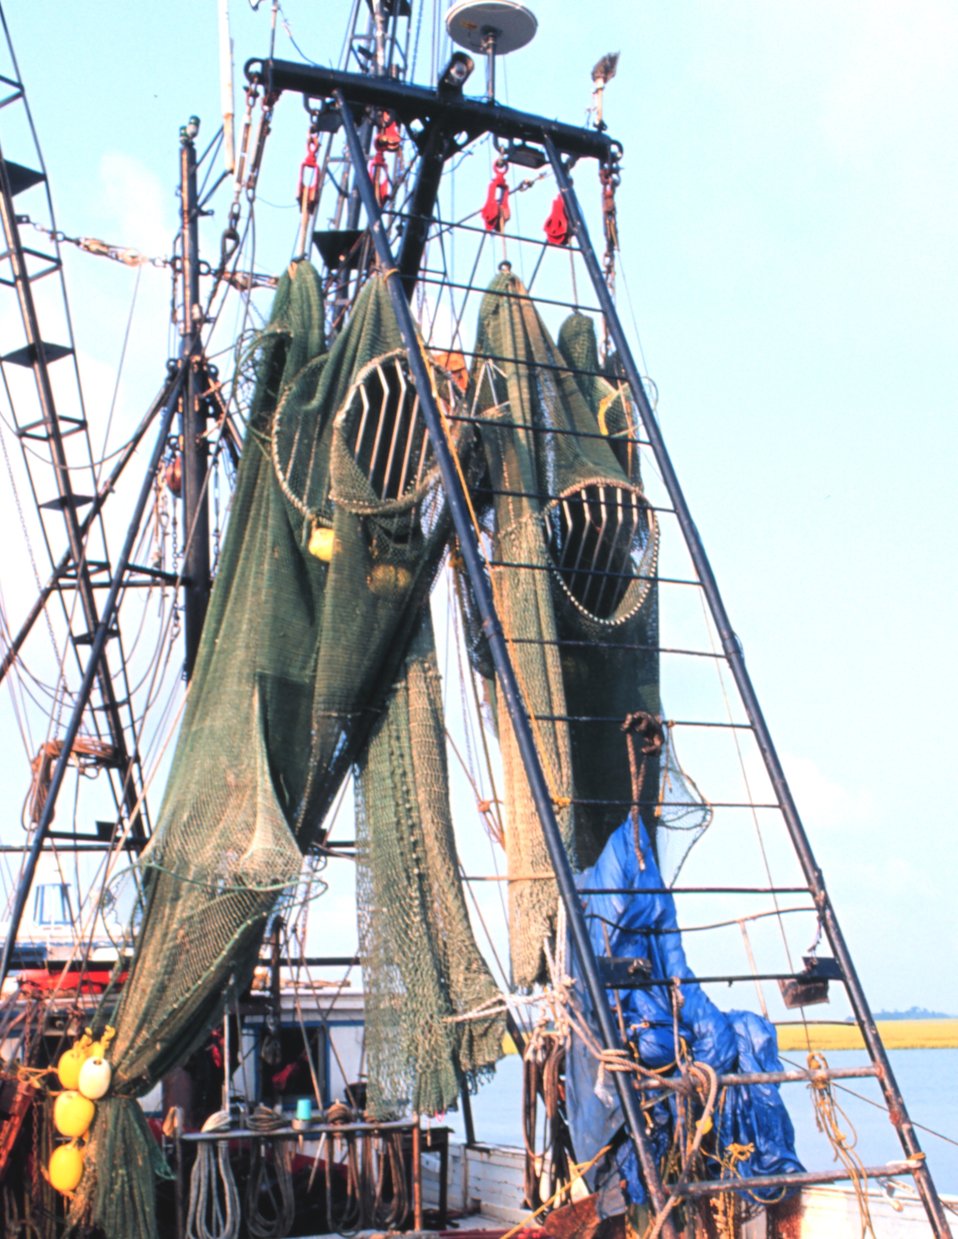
Shrimp boat drying nets. Note turtle excluder devices.